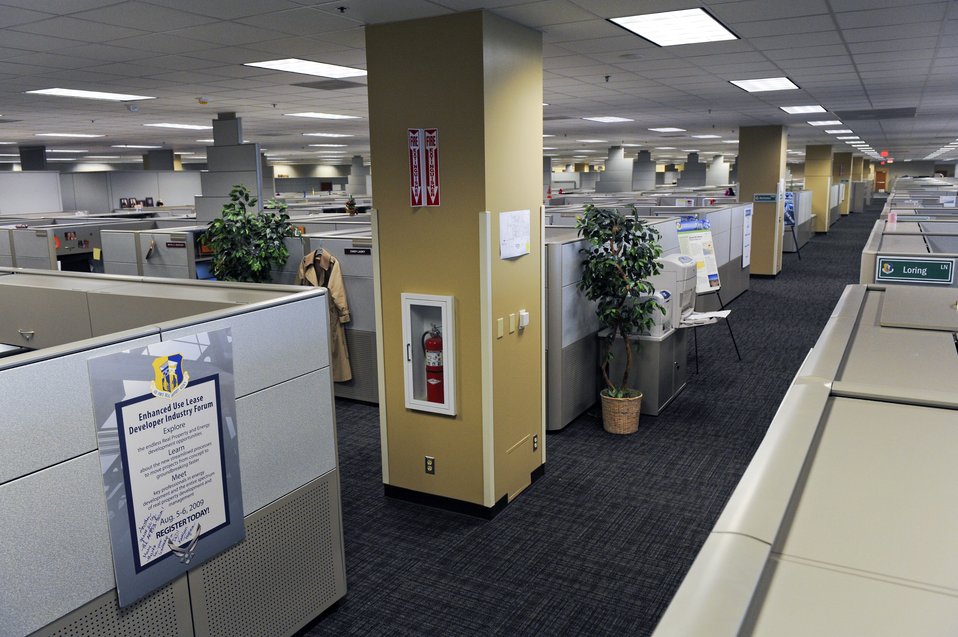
Air Force Real Property Agency officials are the first tenant to move into the newly renovated, quarter-mile long building at the Port San Antonio, Texas. Building 171 will be home to 11 Air Force agencies and will house 2,800 Air Force, government and civilian staff.